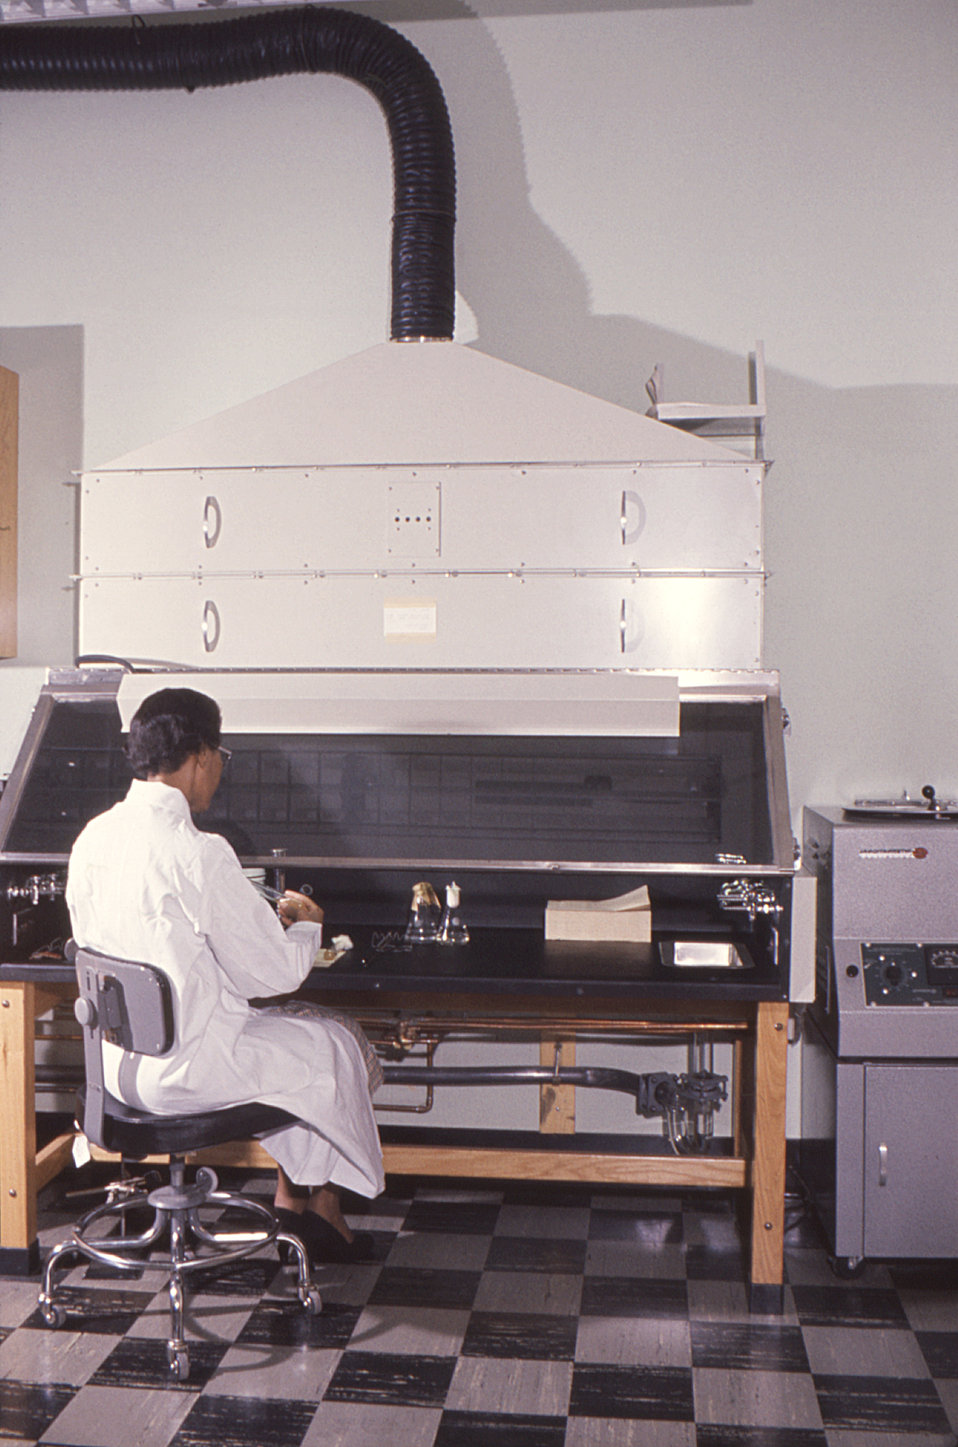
This 1960 historic image depicted a laboratory technician as she was seated at a biological safety cabinet equipped with a vented hood. The negative pressure within the hooded space pulled air into the hood, thereby, keeping contaminants from escaping out into the laboratory environment. See PHIL 12010 for a black and white version of this image.